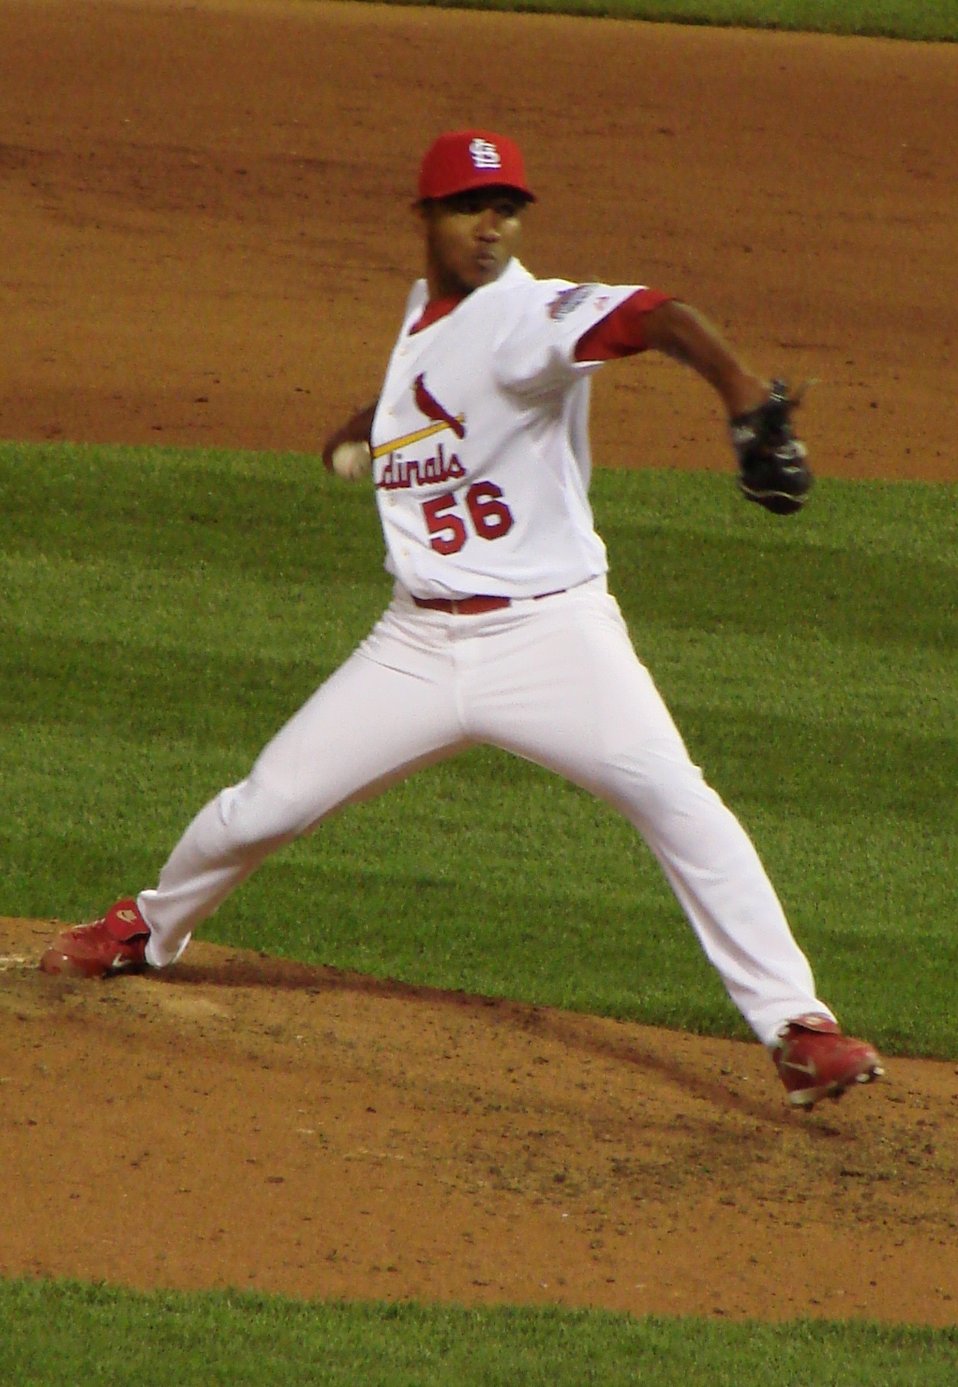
Kelvin Jiménez making his major league debut on April 27, 2007.
02:49, 16 July 2007 . . Mshake3 . . 1022×1480 (626 KB)